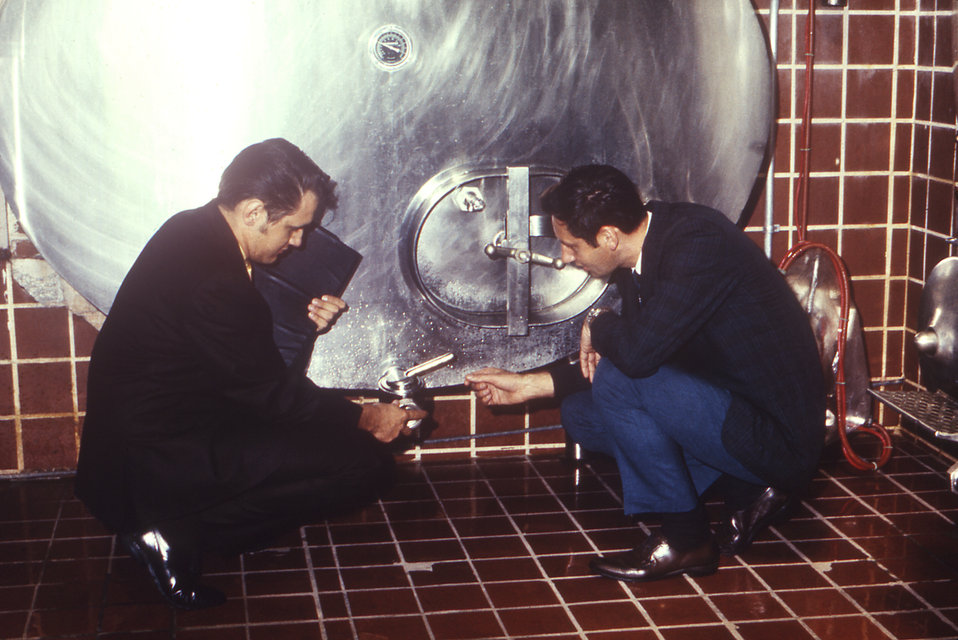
In this 1970 photograph, two CDC sanitarians Frank Bran (Rt), and an unidentified official (Lt), were inspecting the milk-production machinery, during a tour of a dairy farm.